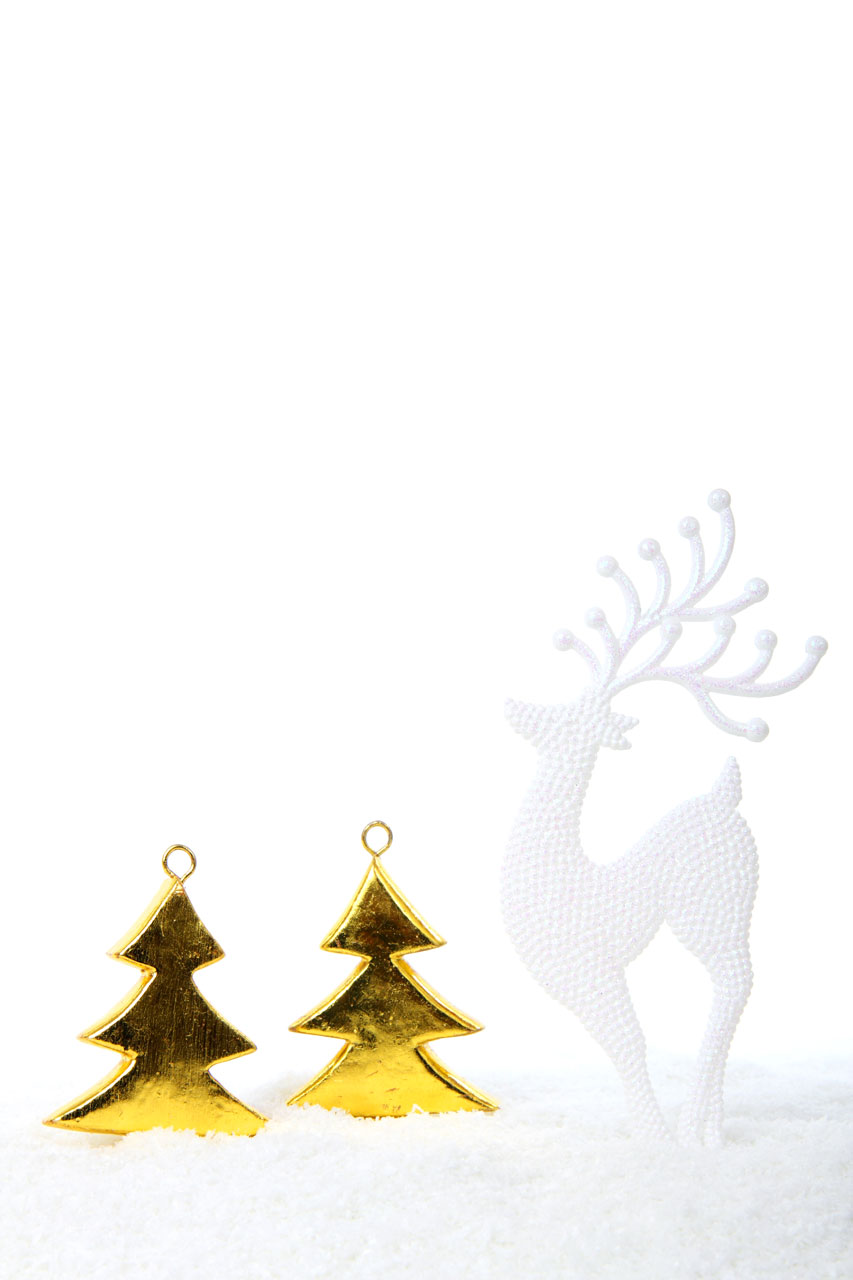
Reindeer and trees christmas decoration.